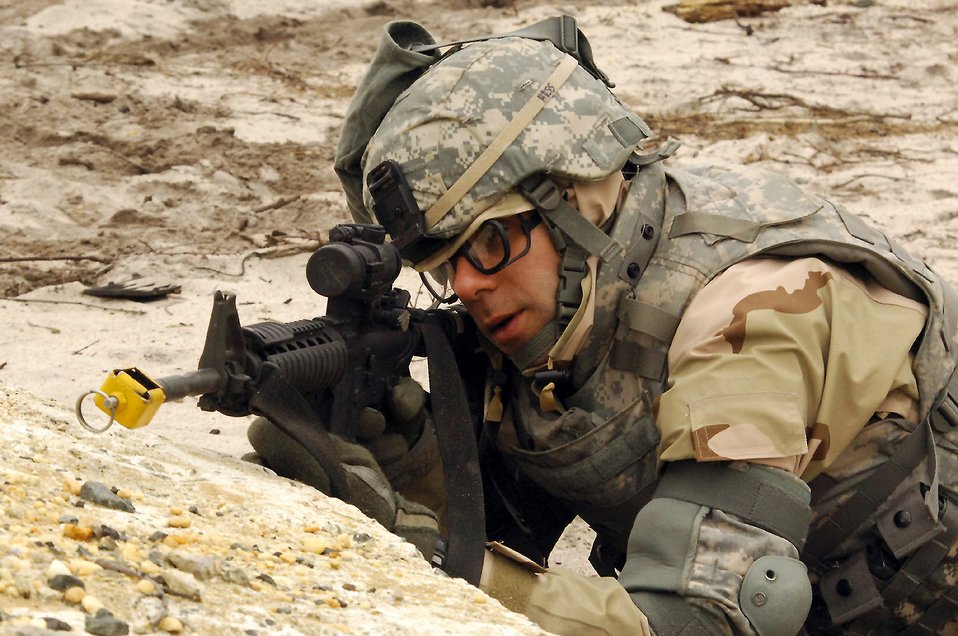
Airmen master Soldier skills training

Capt. Chris Hess sights in on a target during Individual Movement Technique training at the Fort Dix, N.J., improvised explosive device range. The training teaches troops how to conduct maneuvers in an unknown, often hostile, environment. Captain Hess and his fellow Airmen, members of USAF class 25, are completing the Soldier Skills Training Course as they prepare for various deployments around the globe. There are about 75 Airmen currently going through the month-long course.